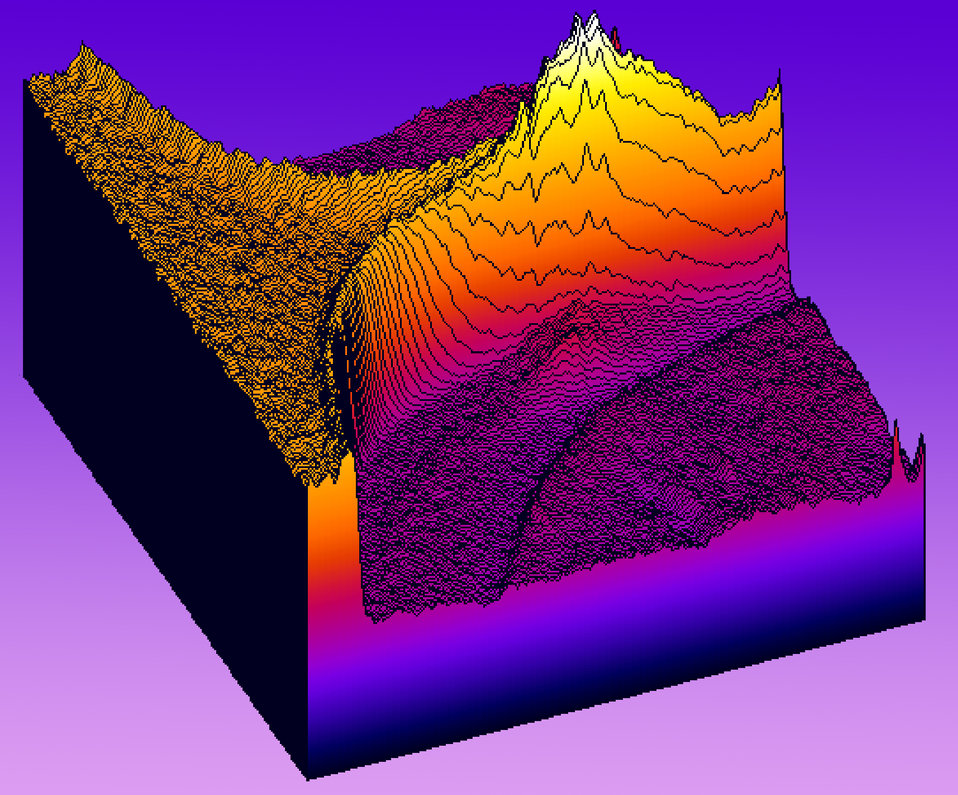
Nanocells; liposomes

The peaks on this three-dimensional plot indicate a high concentration of liposomes forming in a microchannel.